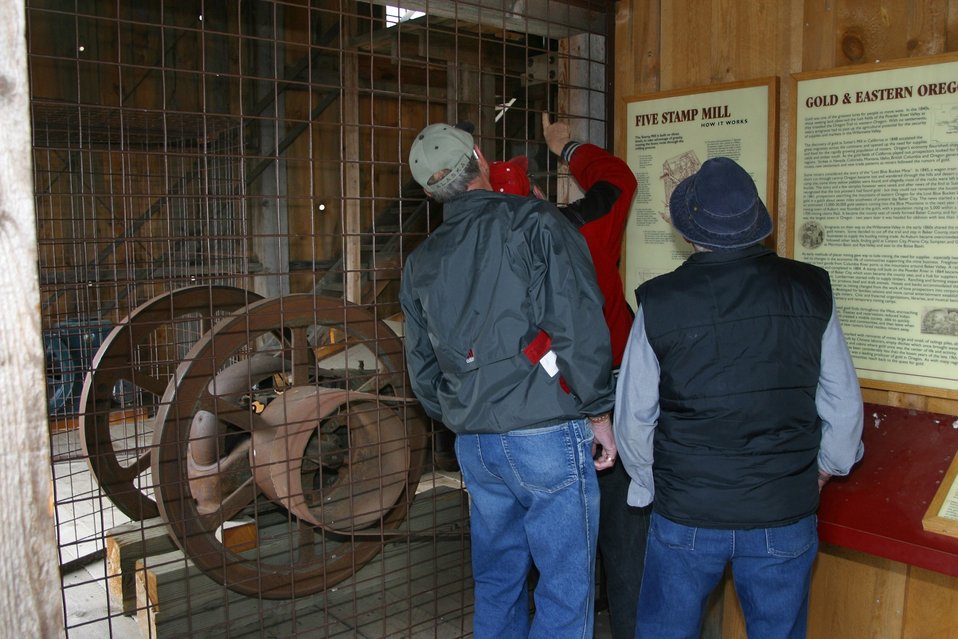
A replica of the Rabbit Mine 1926 stamp mill near Greenhorn in the Blue Mountains of eastern Oregon. It is used to interpret the importance of mining in western history, and the relationship of gold mining to the westward migration story.